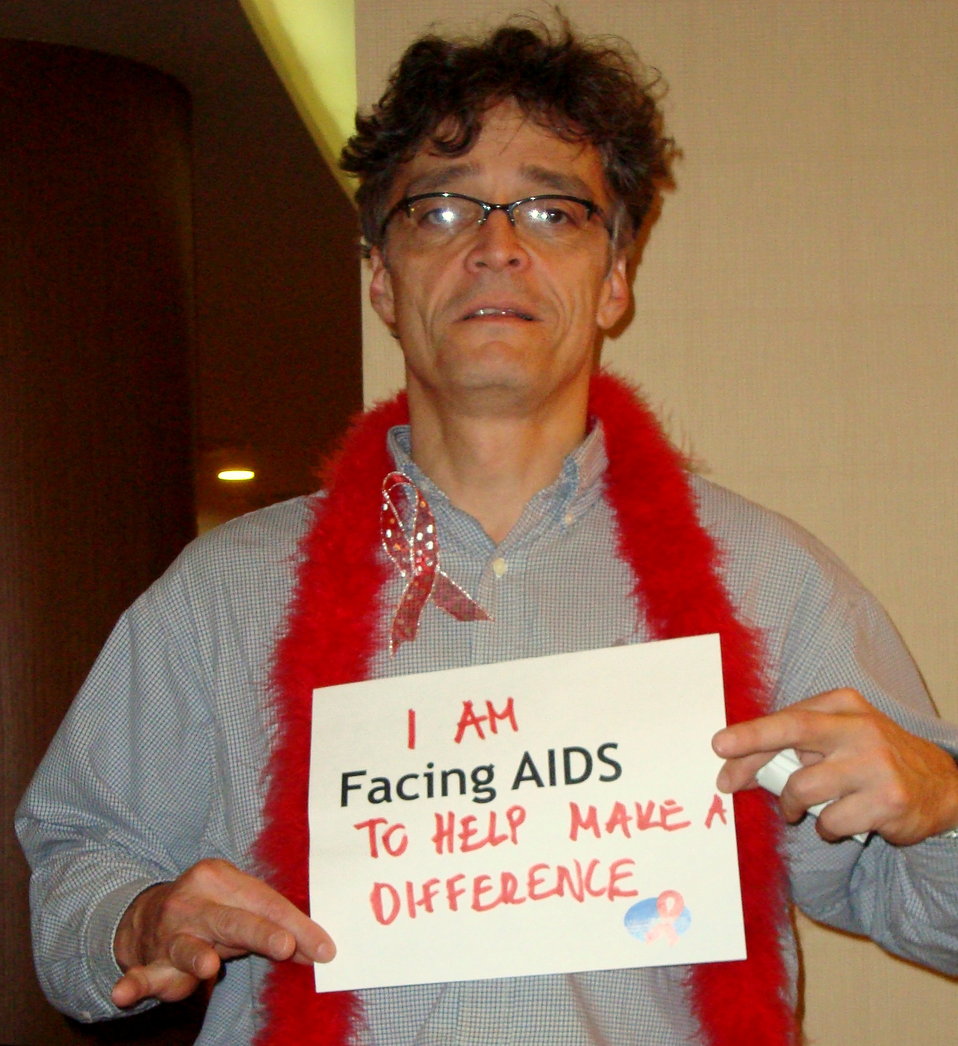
FacingAIDSCampaign 037